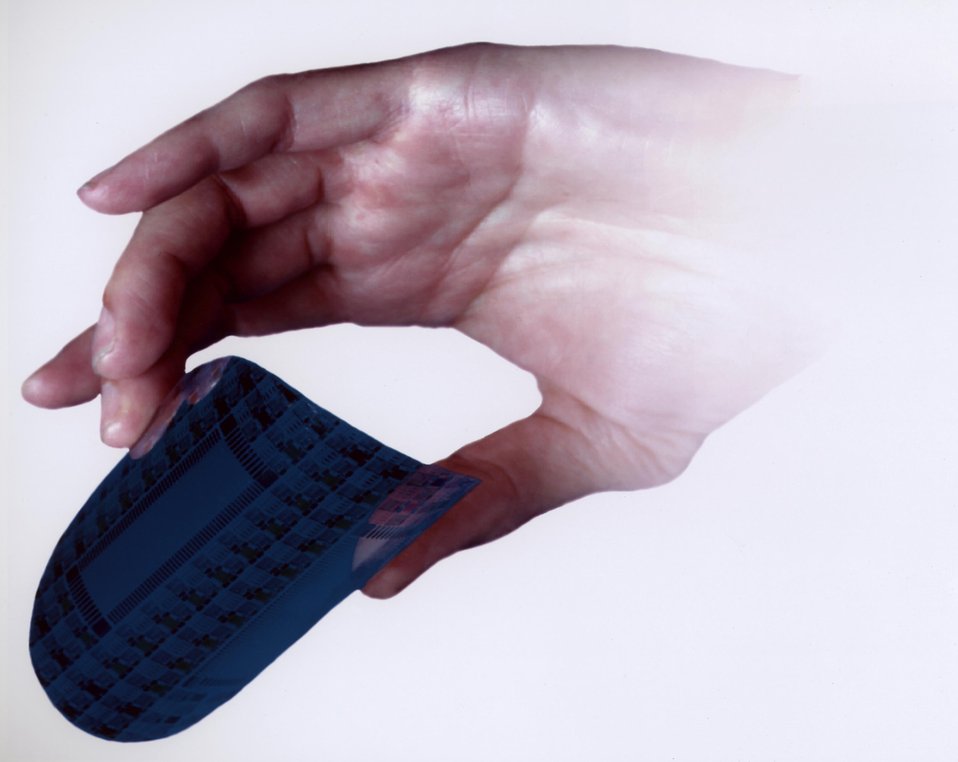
LLNL DEVELOPED PLASTIC SUBSTRATES FOR FLAT-PANEL DISPLAYS.
MANUFACTURERS OF ELECTRONICS WITH FLAT-PANEL DISPLAYS HAVE SEARCHED FOR A PLASTIC THAT WOULD BE CHEAPER, MORE COMPACT AND MORE RUGGED AS AN ALTERNATIVE TO GLASS. MOST THIN-FILM TRANSISTORS (TFTS) ARE MANUFACTURED ONTO A RIGID GLASS SUBSTRATE, INVOLVING BAKING GLASS SHEETS AT TEMPERATURES OF UP TO 600 DEGREES CENTIGRADE. LLNL RESEARCHERS HAVE SHOWN THAT TFTS CAN BE MANUFACTURED ON TOP OF THIN, FLEXIBLE PLASTIC SHEETS INSTEAD OF GLASS BY KEEPING MANUFACTURING TEMPERATURES AT OR BELOW 100 DEGREES CENTIGRADE.